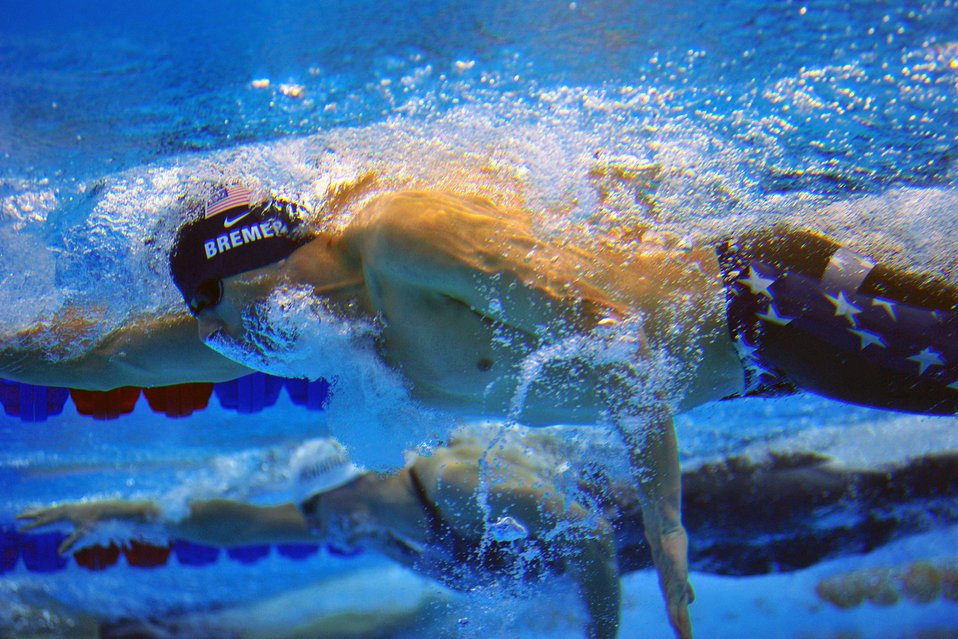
Striving for excellence

Capt. Eli Bremer swims to a seventh-place finish in the 200-meter freestyle portion of the Olympic men's modern pentathlon Aug. 21 in Beijing. Capt. Bremer ultimately finished 23rd in the one-day event that includes pistol shooting, fencing, swimming, equestrian riding and cross-country running.